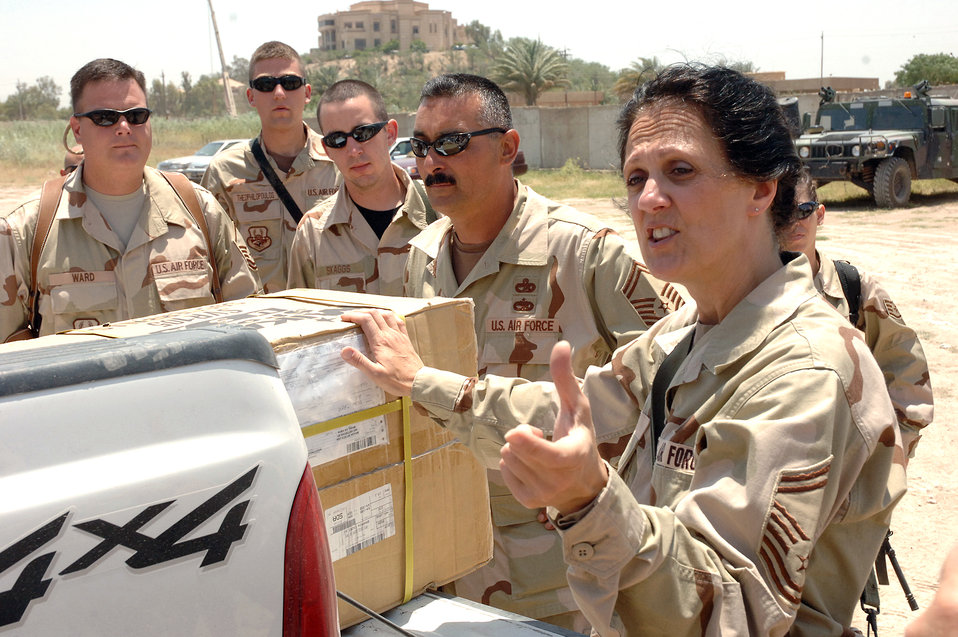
Airmen pitch in for worthy cause in Iraq

Senior Master Sgt. Jennifer Taglieri briefs the plan of the day to other Airmen from Sather Air Base, Iraq, before entering the Army's Civil Military Operations Center at the Radwinya Palace Complex. Three days a week, Airmen from Sather volunteer at the facility, providing limited medical care and other needs to local Iraqi families. Sergeant Taglieri is deployed from Lackland Air Force Base, Texas.